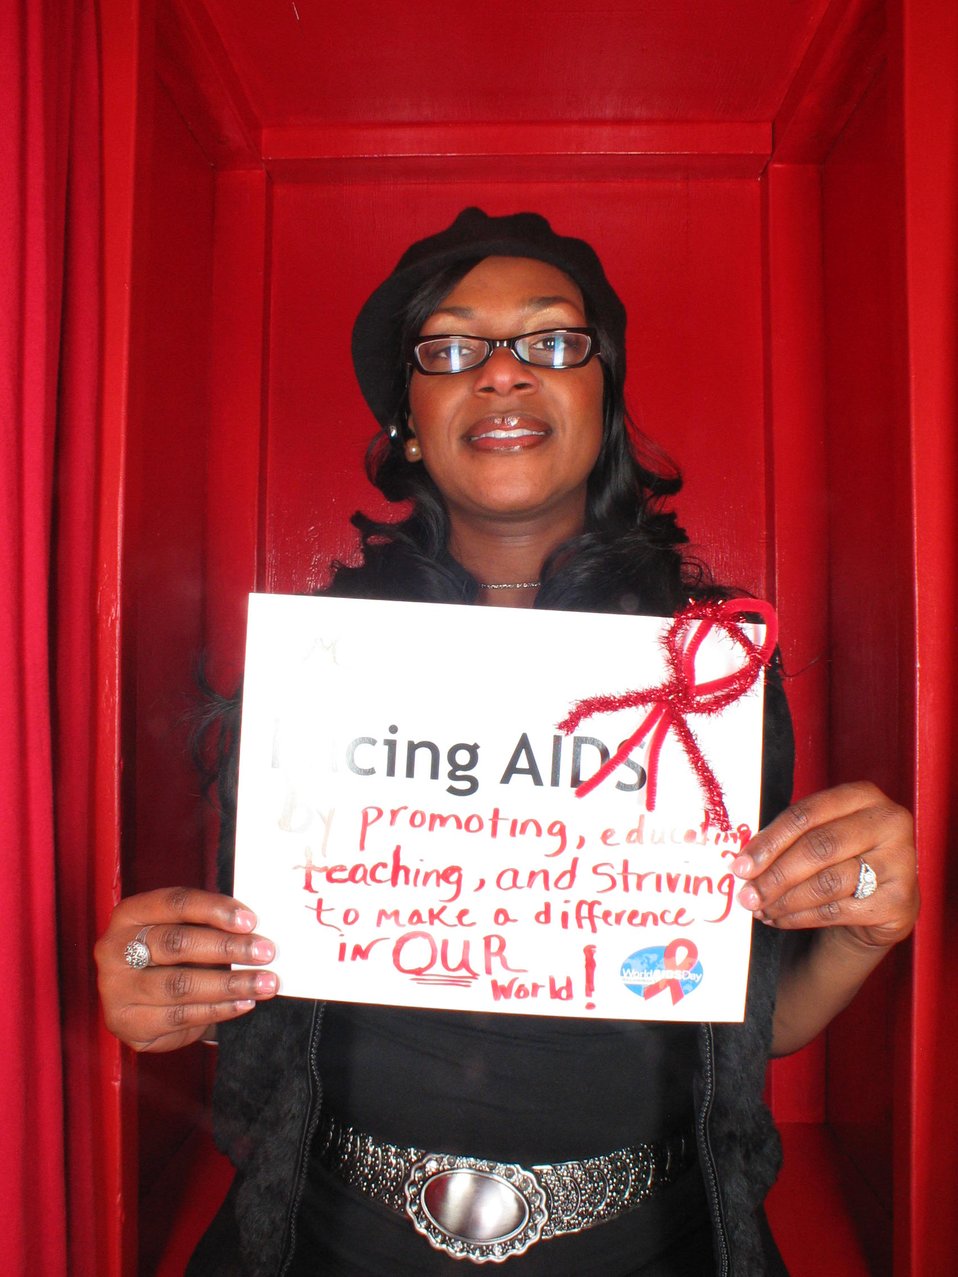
Facing AIDS promoting education, treaching and striving to make a difference in OUR world!